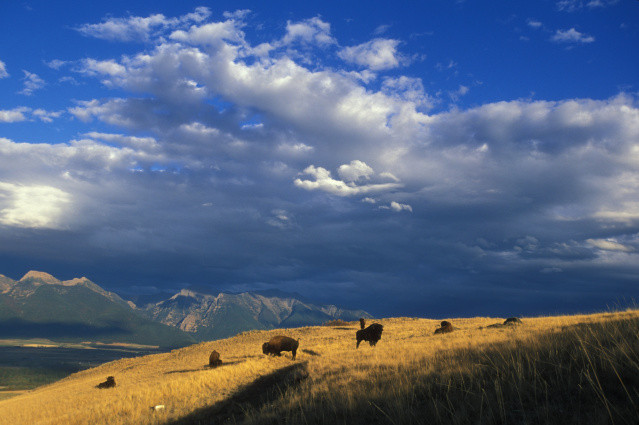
bison herd

National Bison Range